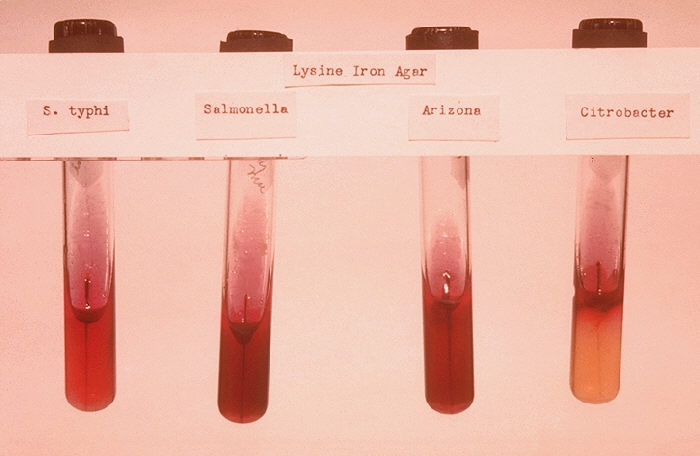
Stab cultures of Salmonella typhi and controls.